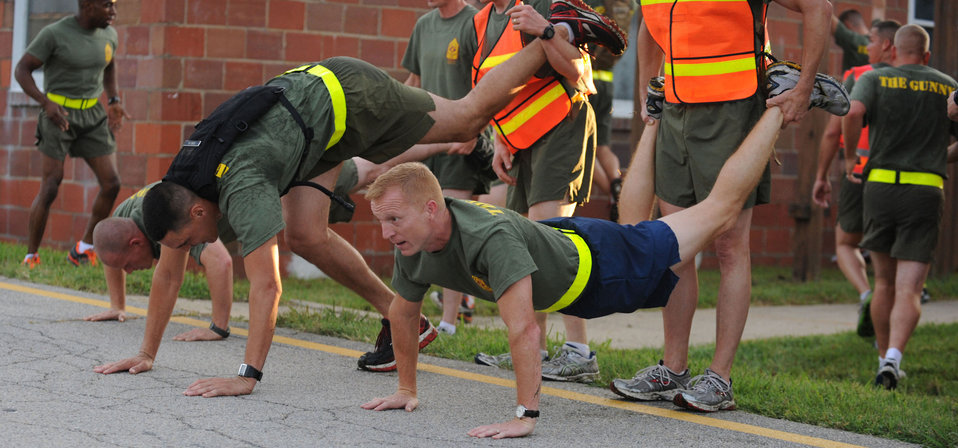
Critical training

Air Force Master Sgt. Michael Noel, center, does elevated push-ups with his PME class as part of the U.S. Marine Corps Staff Noncommissioned Officer Academy Advanced Course at Marine Corps Base Quantico, Va., Sept. 14, 2012. Noel is the Secretary of the Air Force Public Affairs superintendent of force management at the Pentagon.